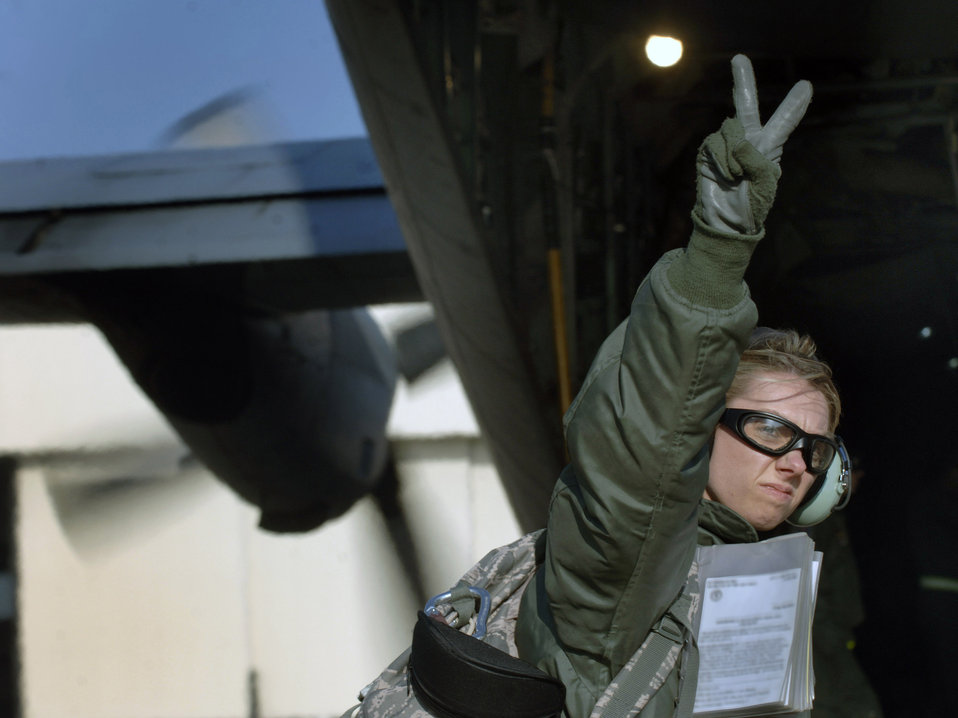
Ready for two more!

Flight nurse Capt. Stephanie Ellenburg signals the number of Airmen needed for the next off-loading of patients at Ramstein Air Base, Germany, during an aeromedical evacuation exercise.